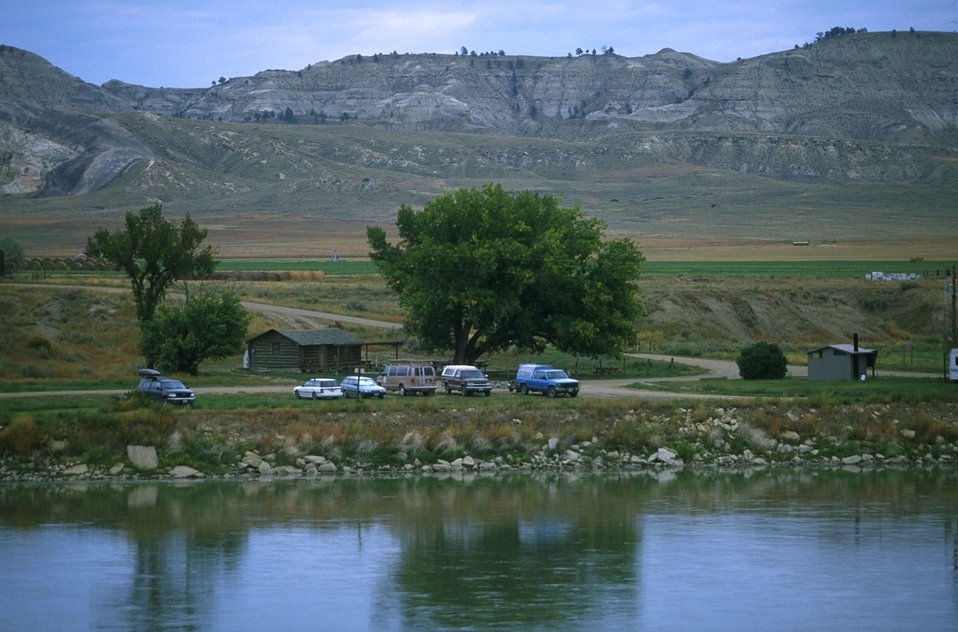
Judith Landing along Upper Missouri National Wild and Scenic River